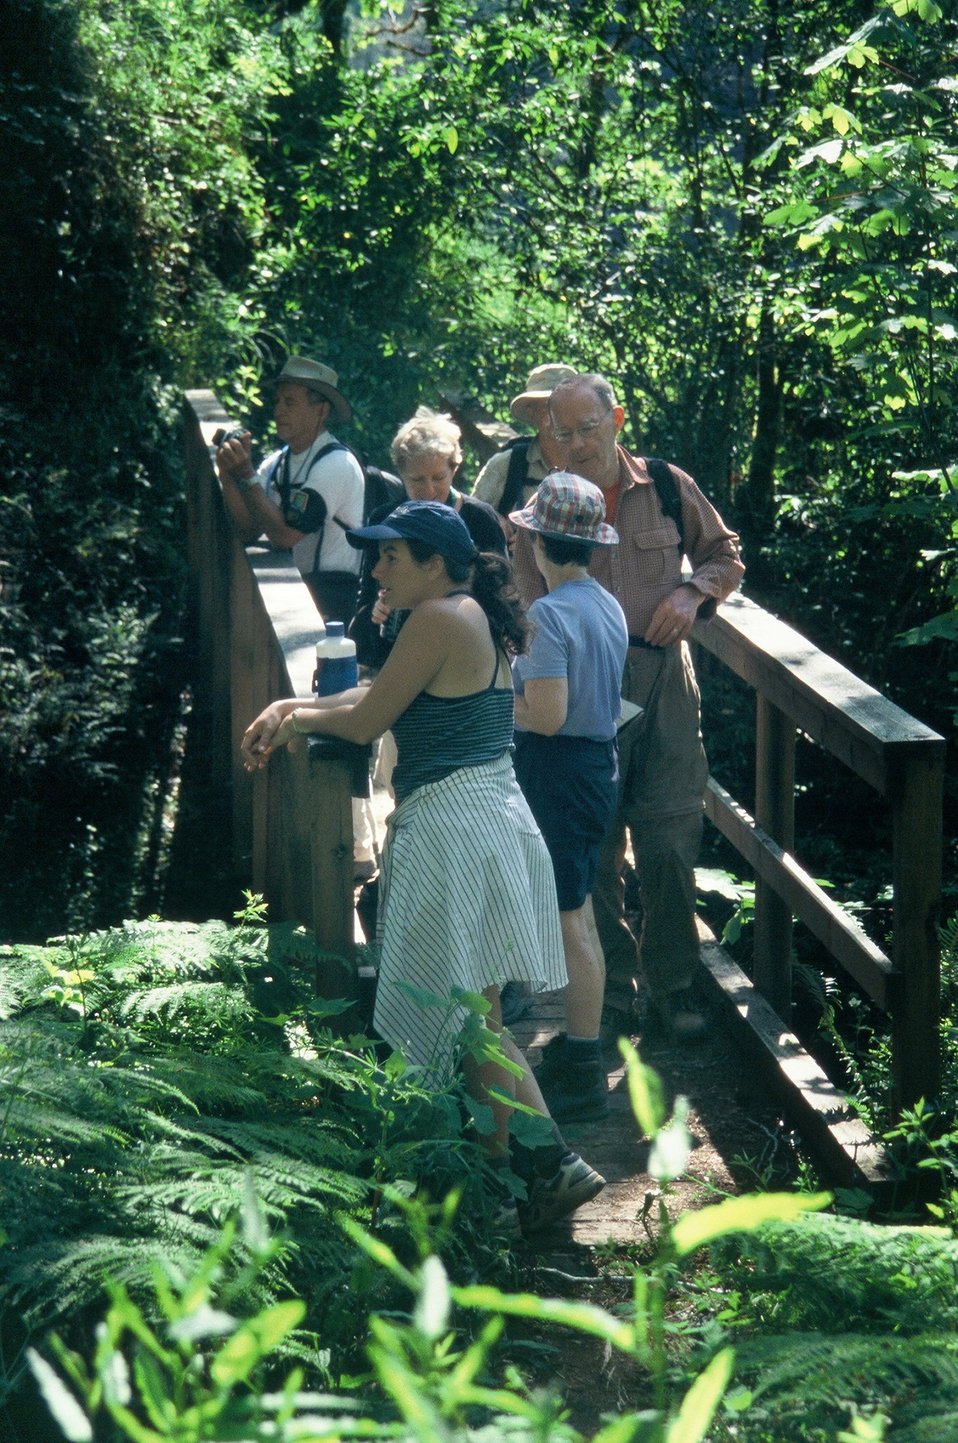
Wild section of the Rogue River from Grave Creek to Foster Bar May 19 to May 22.